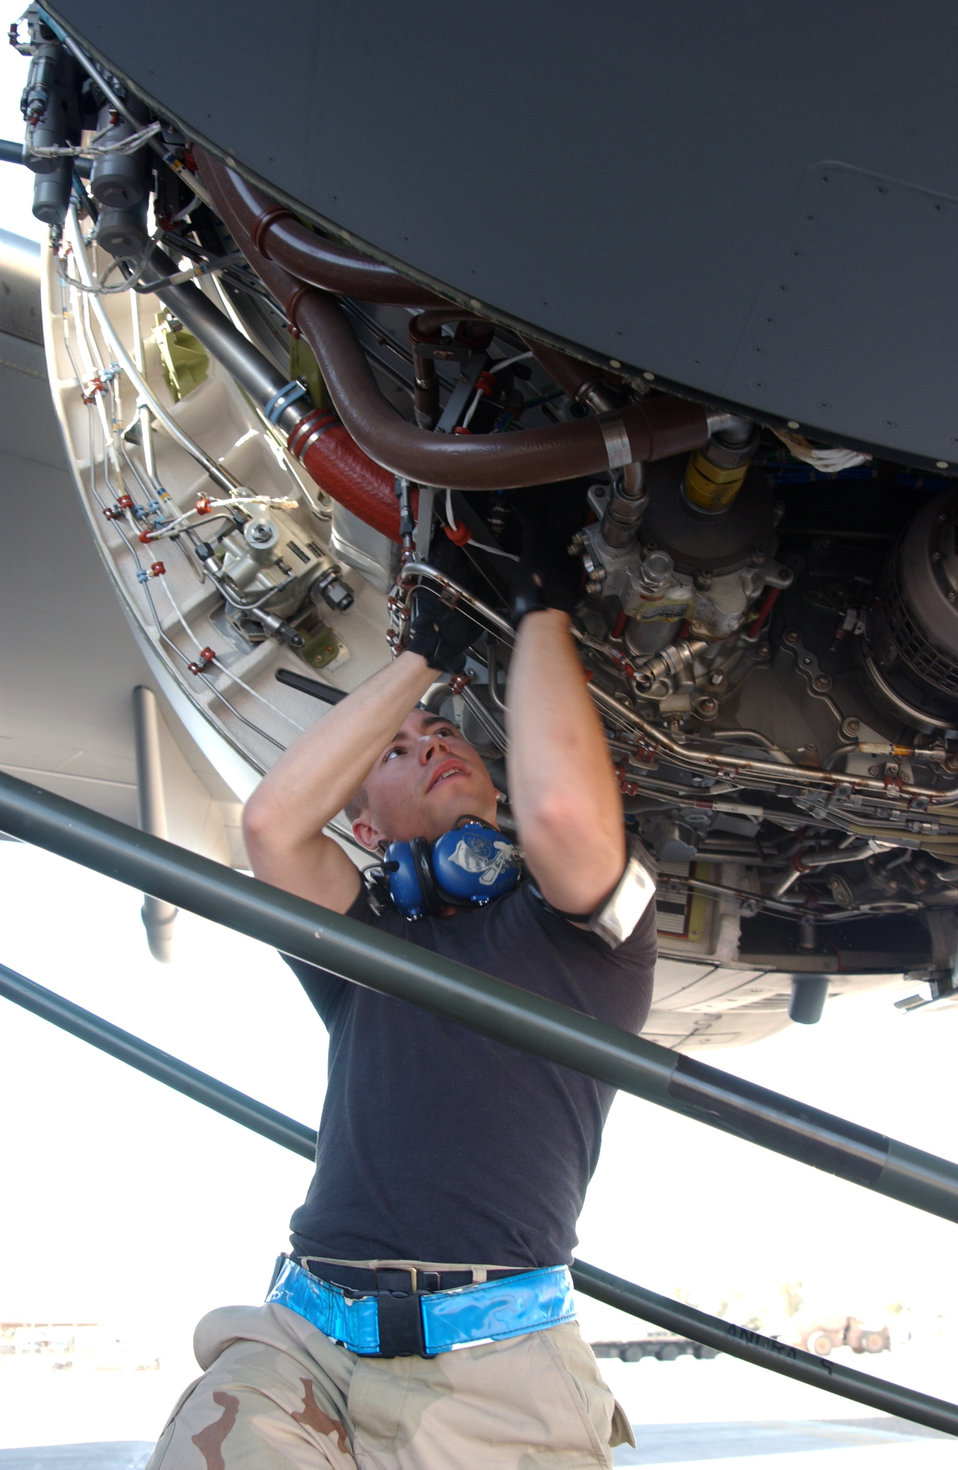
Balad's mission begins with strategic airlift

Airman 1st Class Mark Mano works on the engine of a C-17 Globemaster III Sept. 18 at Balad Air Base, Iraq. Airman Mano is assigned to the 721st Air Mobility Operations Group, Detachment 5. The Air Mobility Command detachment is responsible for the recovering, marshaling and repair of the C-5 Galaxies and C-17 that land here